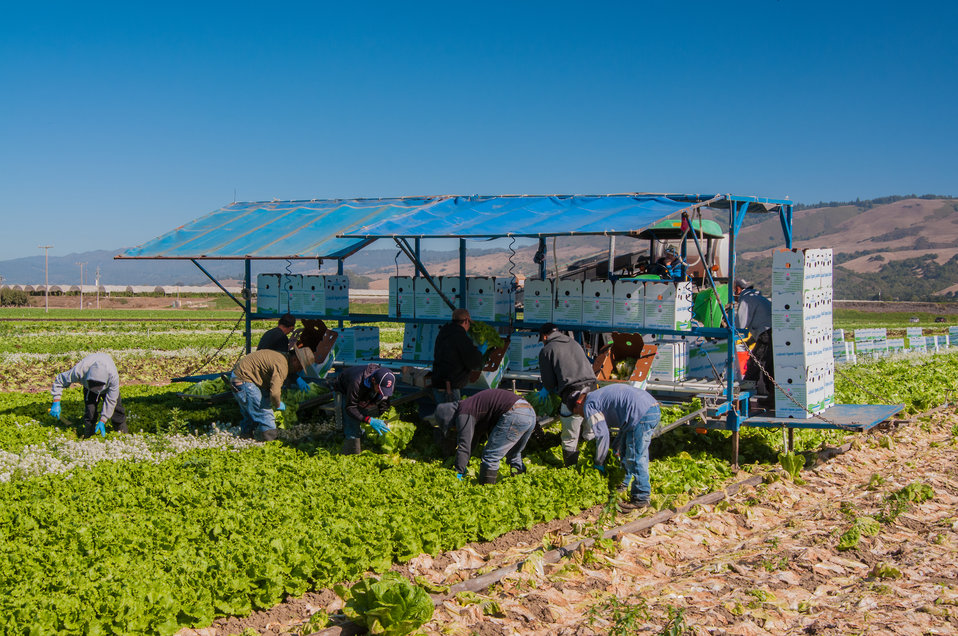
Migrant workers harvest Lettuce at Lakeside Organic Gardens in Watsonville, CA on Tuesday, Aug. 27, 2013.